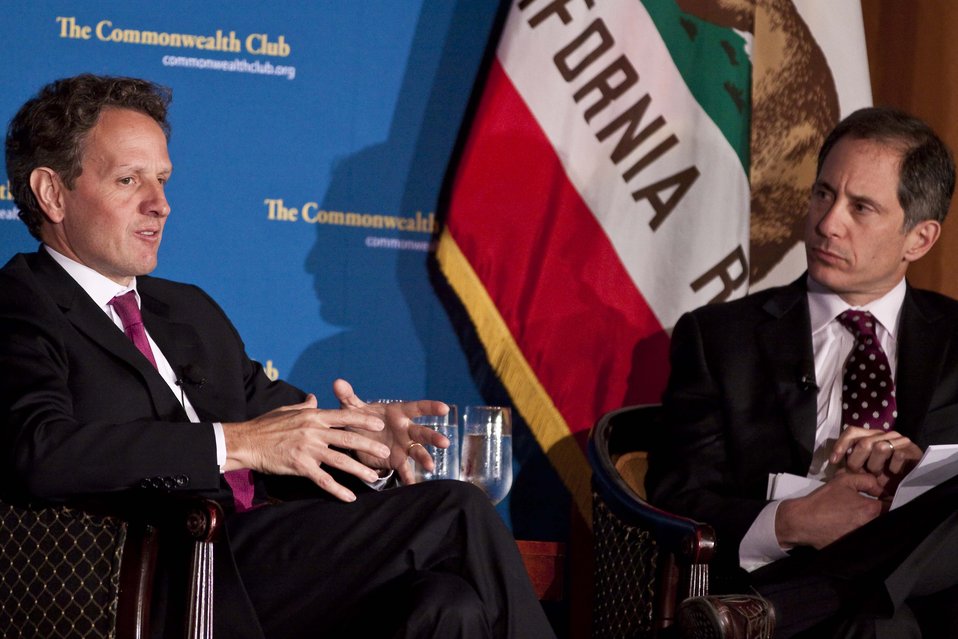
Secretary Geithner Speaks at the San Francisco Commonwealth Club

Treasury Secretary Tim Geithner delivered remarks on the U.S.-China economic relationship in advance of the fourth round of the U.S.-China Strategic and Economic Dialogue. The Secretary reviewed the progress made to date in advancing opportunities for American workers and American firms that do business with China as well as the economic challenges that remain for both countries. He underscored the importance of enhancing cooperation between the U.S. and China to address those challenges and also discussed the roles each country can play to reinforce the global recovery. Following his remarks, Secretary Geithner participated in a moderated discussion with Adam Lashinsky of Fortune Magazine.